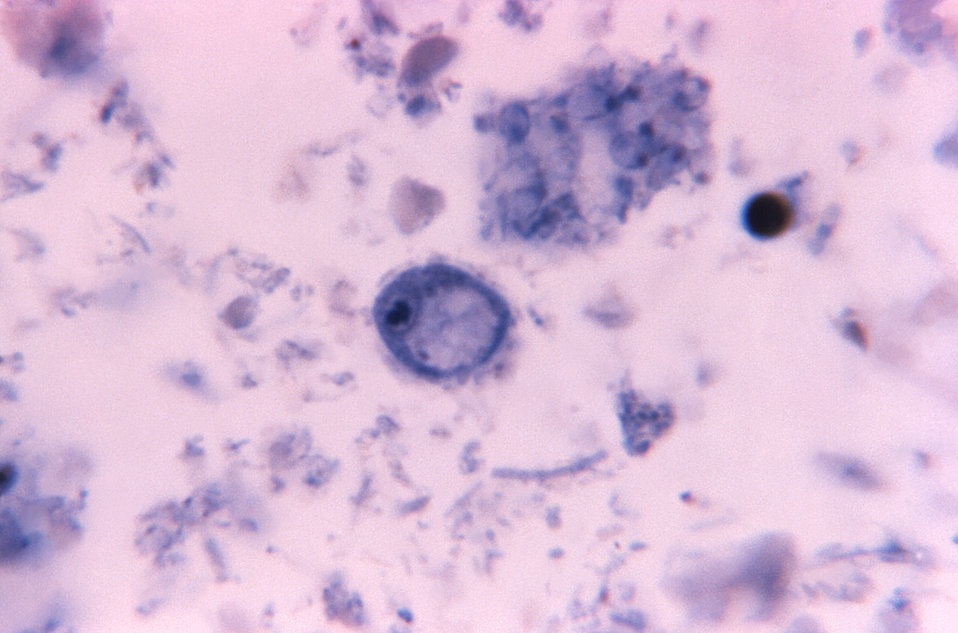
This photomicrograph depicts a single Iodamoeba buetschlii parasitic cyst within which a large glycogen is quite visible.